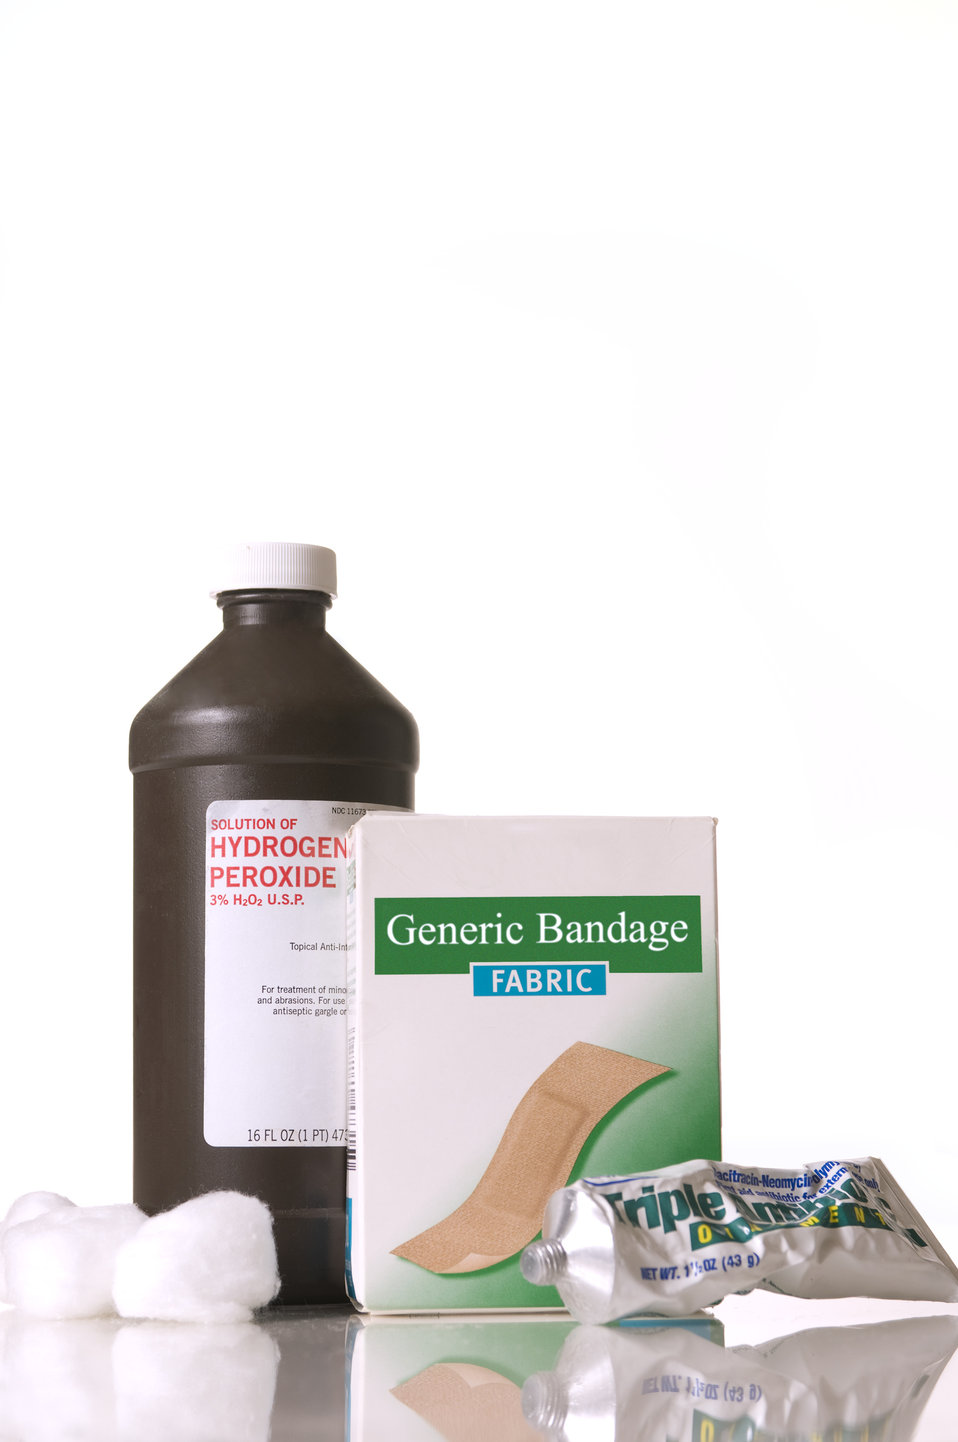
Depicted in this still life, are items associated with the sterile delivery of proper health care. Pictured here is a bottle of the disinfectant, hydrogen peroxide (H2O2), a box of adhesive bandages, two cotton balls, which had been set atop the counter next to the H2O2, and a rumpled tube of antibiotic ointment.